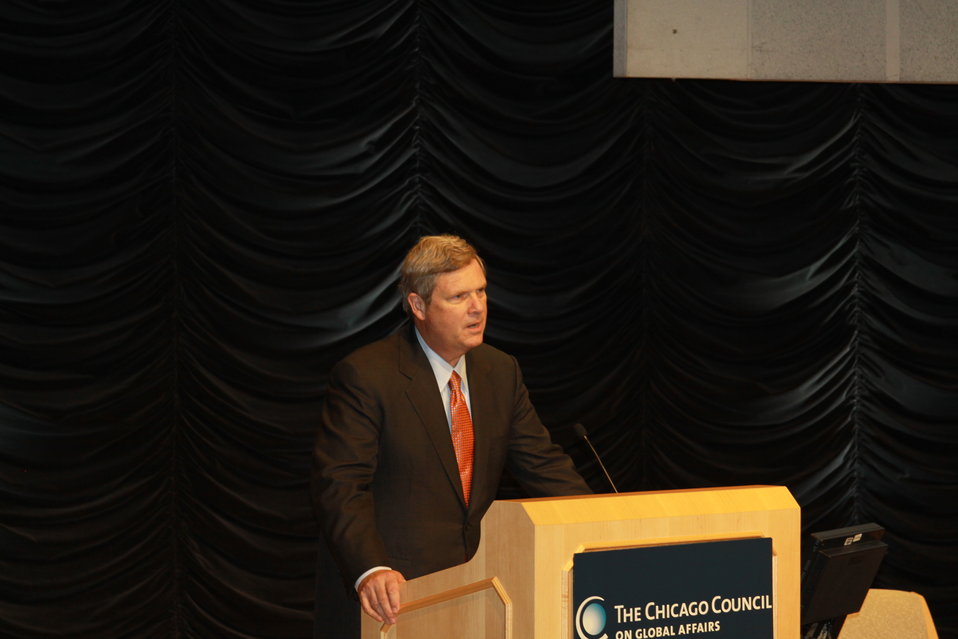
Secretary Vilsack Delivers Remarks

U.S. Secretary of Agriculture Tom Vilsack delivers remarks on USDA's role in Feed the Future, the U.S. government's global hunger and food security initiative, at the Chicago Council on Global Affairs' Symposium on Global Agriculture and Food Security in Washington, D.C., on May 24, 2011.